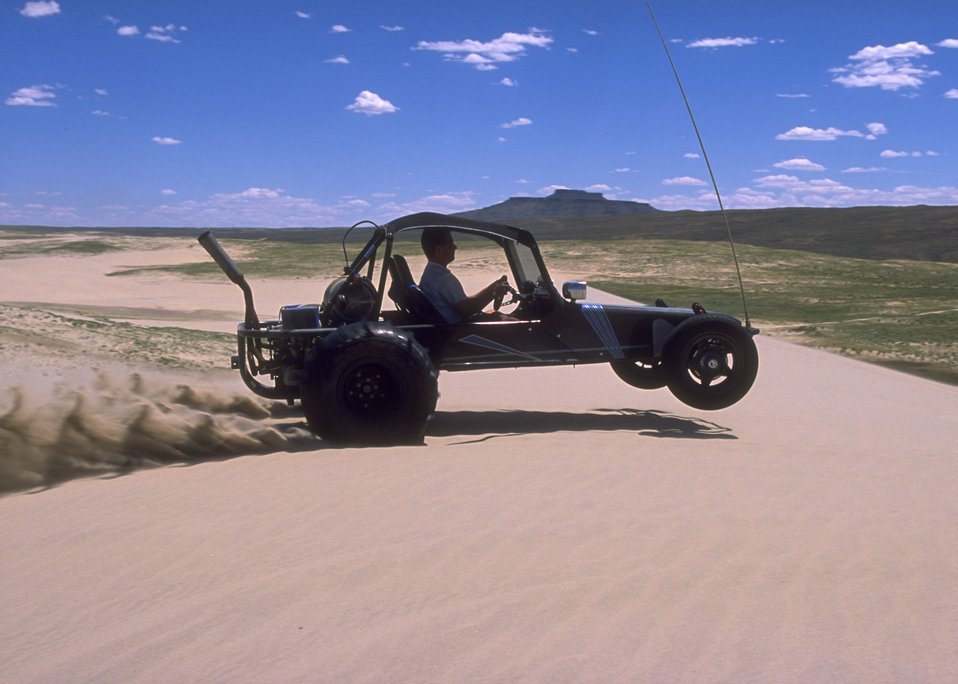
Sand Dunes OHV Area, Rock Springs Field Office.